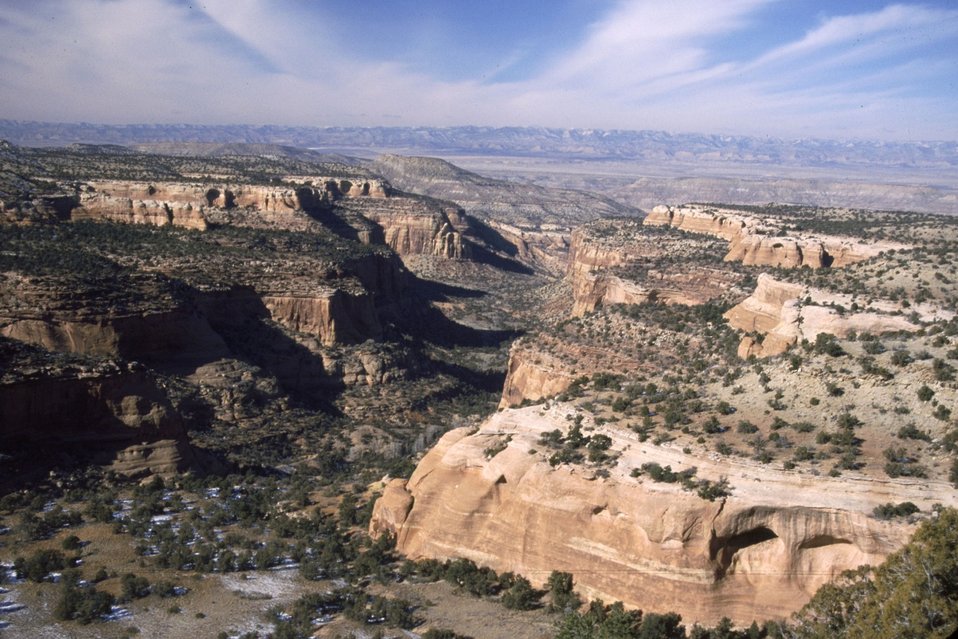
Rattlesnake Canyon